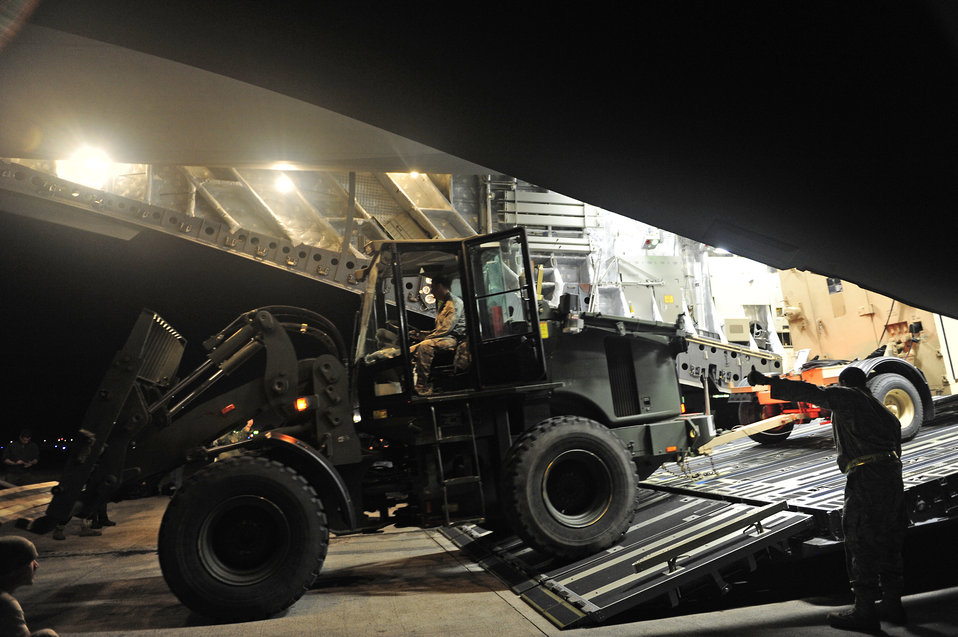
Haiti Earthquake Relief

Airmen offload cargo from a C-17 Globemaster III aircraft from Charleston Air Force Base, S.C., Jan. 15, 2010, at the Port-au-Prince airport in Haiti in support of relief efforts in the aftermath of a devastating earthquake. The Airmen are assigned to the 621st Contingency Response Wing at Joint Base McGuire-Dix-Lakehurst, N.J.